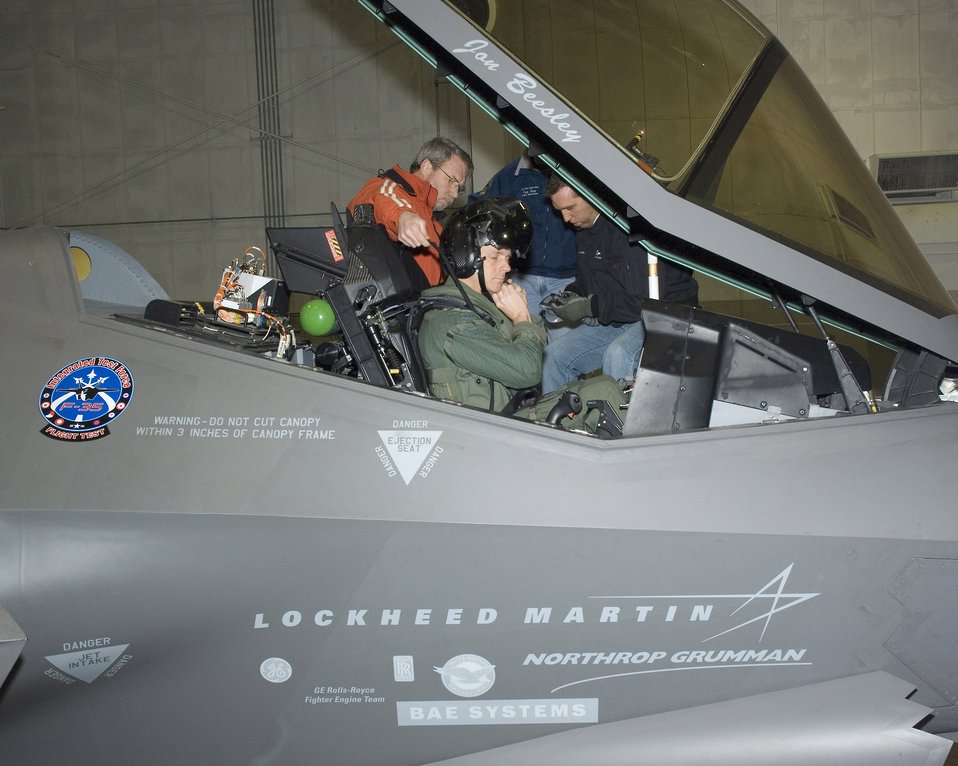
Edwards Airman flies high as first military F-35 pilot

Lt. Col. James Kromberg adjusts his helmet as he prepares to fly the F-35 Lightning II Jan. 30 at the Lockheed Martin facility at Naval Air Station Fort Worth, Texas. Colonel Kromberg's test flight marks the first time a military pilot flew the F-35. He is the 461st Flight Test Squadron director of operations.